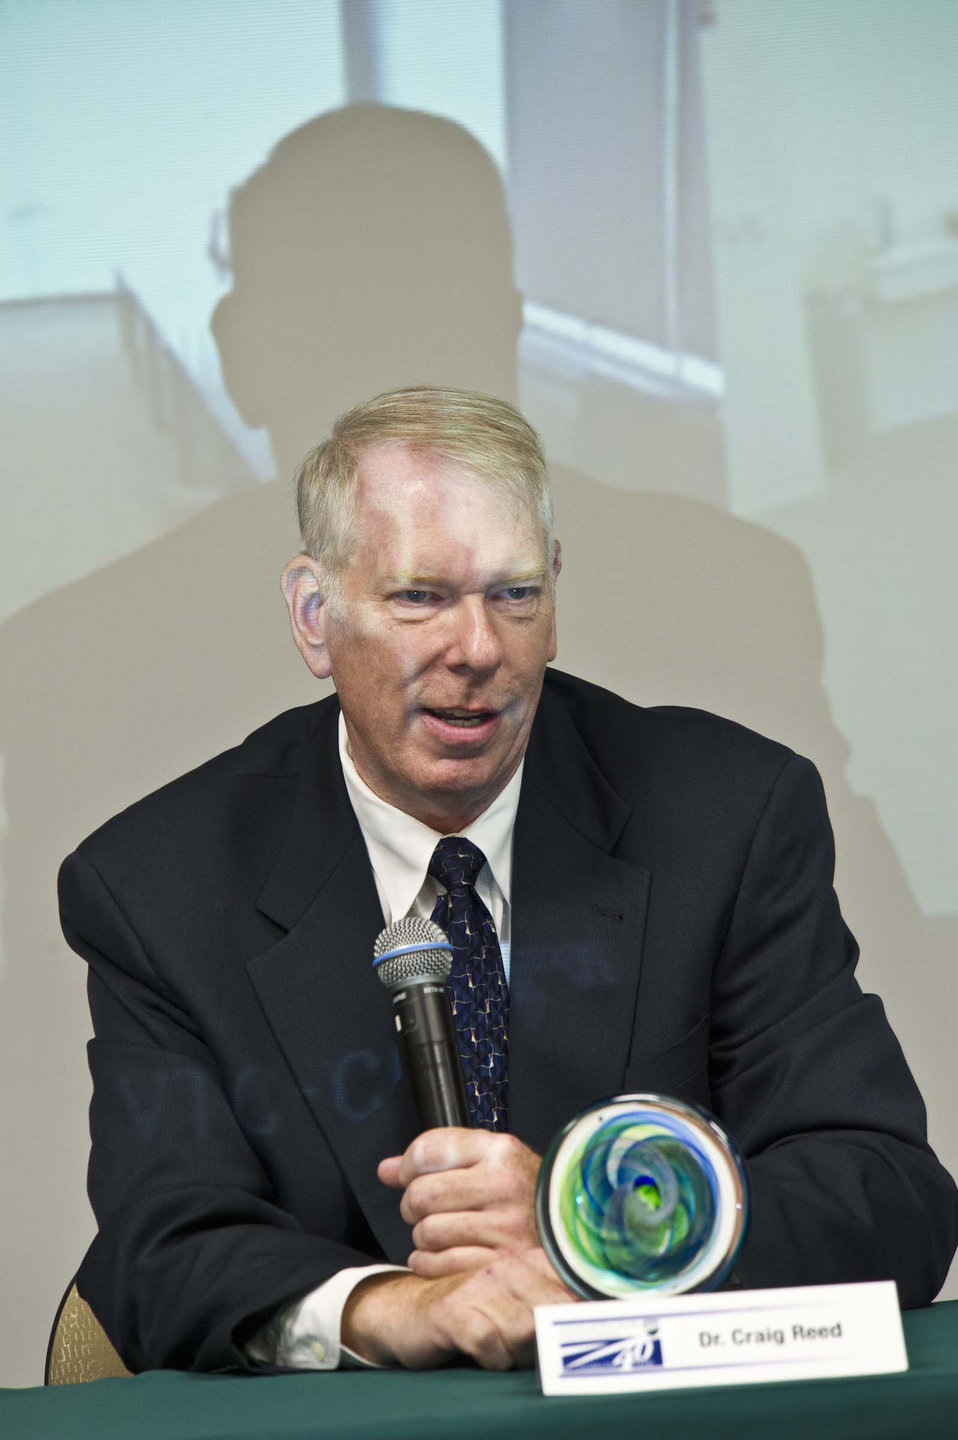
Former U.S. Department of Agriculture (USDA) Animal and Plant Health Inspection Service (APHIS) Administrator Craig Reed (1998-2001) participates in a panel discussion at the 40th annivesary of APHIS on May 16, 2012.